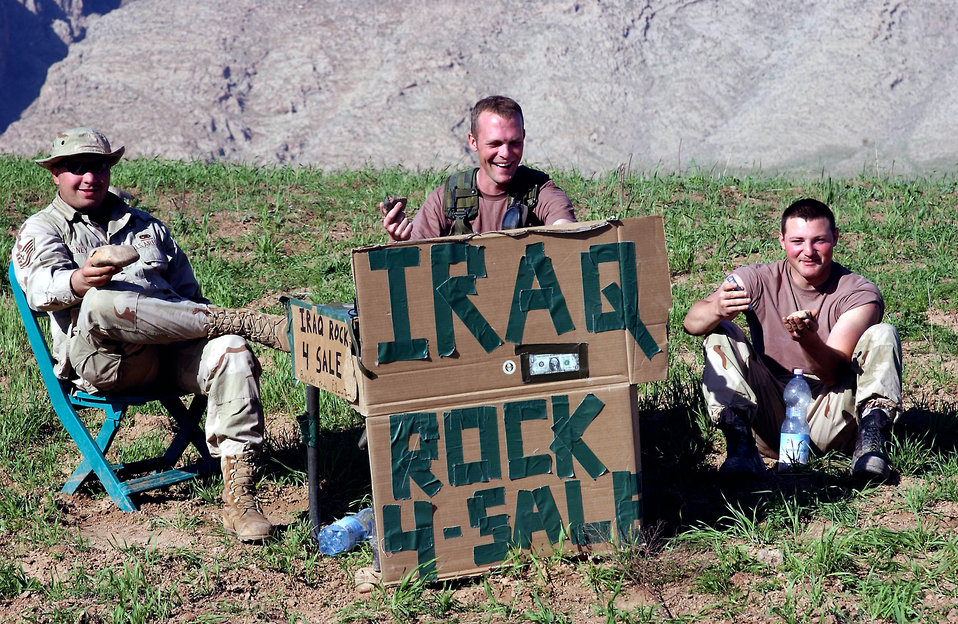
Capitalists at work

OPERATION IRAQI FREEDOM -- The rock merchants at Bashur Airfield in northern Iraq are (left to right) Staff Sgts. Cliff Oney, Todd Jackson and Senior Airman Luke Novak. They started